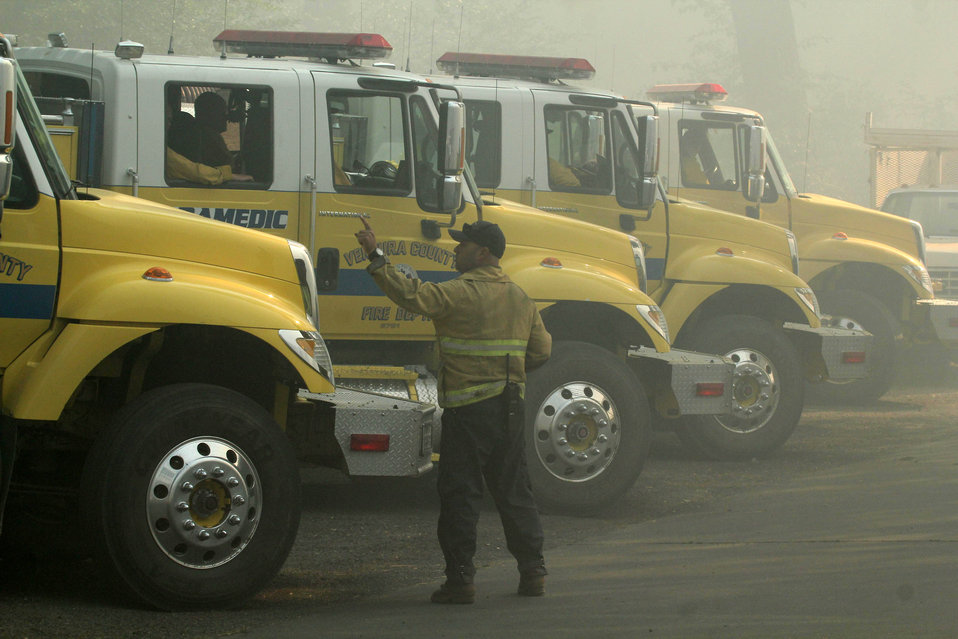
Engine crews stage equipment on Highway 120 at the Rim Fire. The Rim Fire in the Stanislaus National Forest near in California began on Aug. 17, 2013 and is under investigation. The fire has consumed approximately 192,737 acres and is 30% contained.